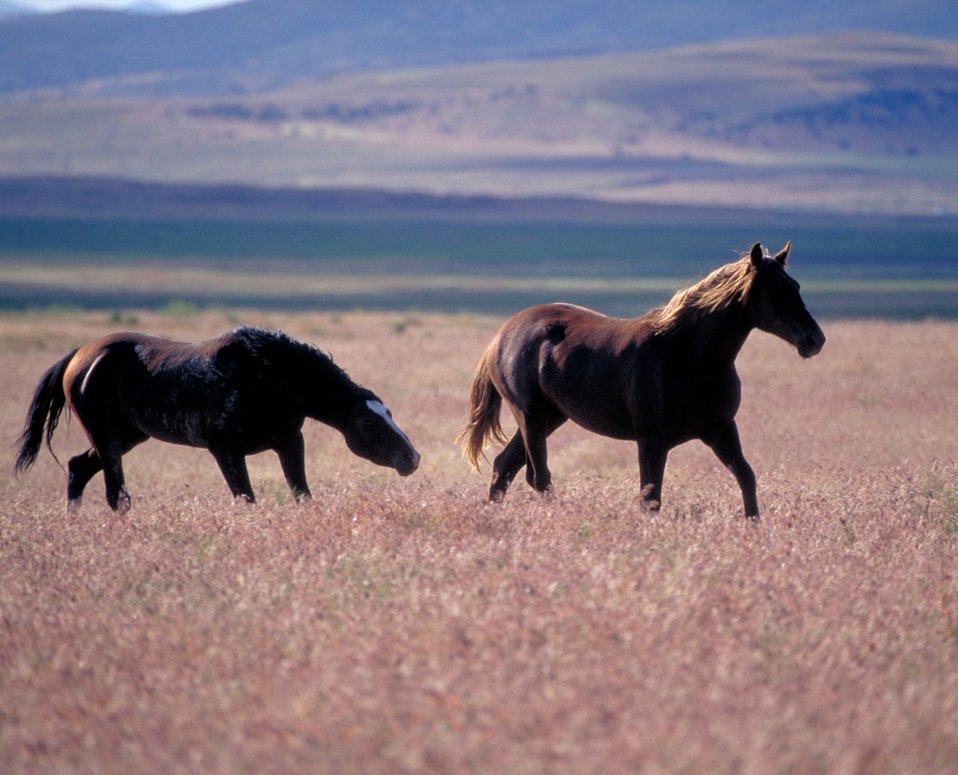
Onaqui Herd near Dugway, Utah.